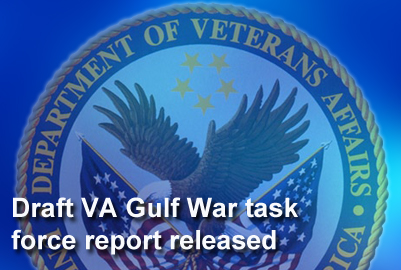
Task force report released